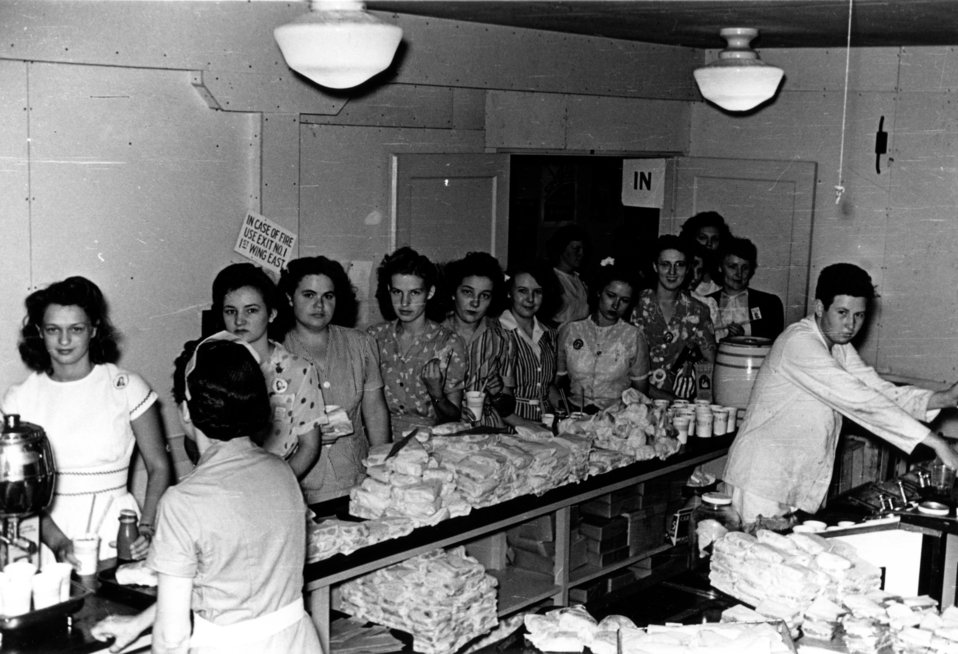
Daily Life at Oak Ridge